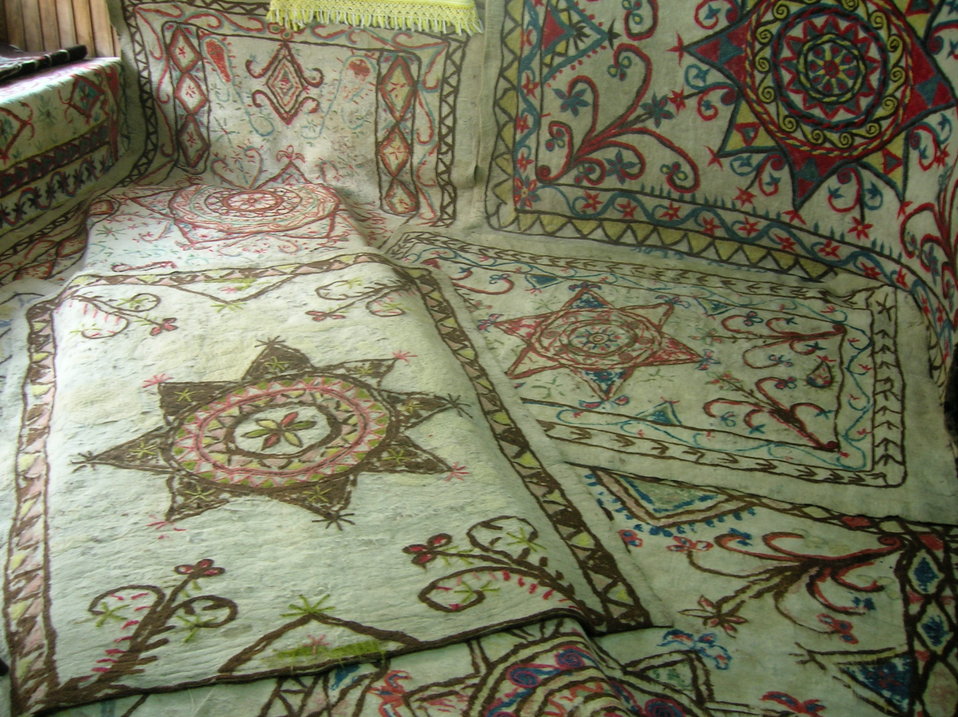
Exhibition of wool carpets in Lyutov House, in Koprivshtitsa (Bulgaria). Fran√ßais†: Exposition de tapis en laine dans la Maison Liutov, √† Koprivchtitsa (Bulgarie).